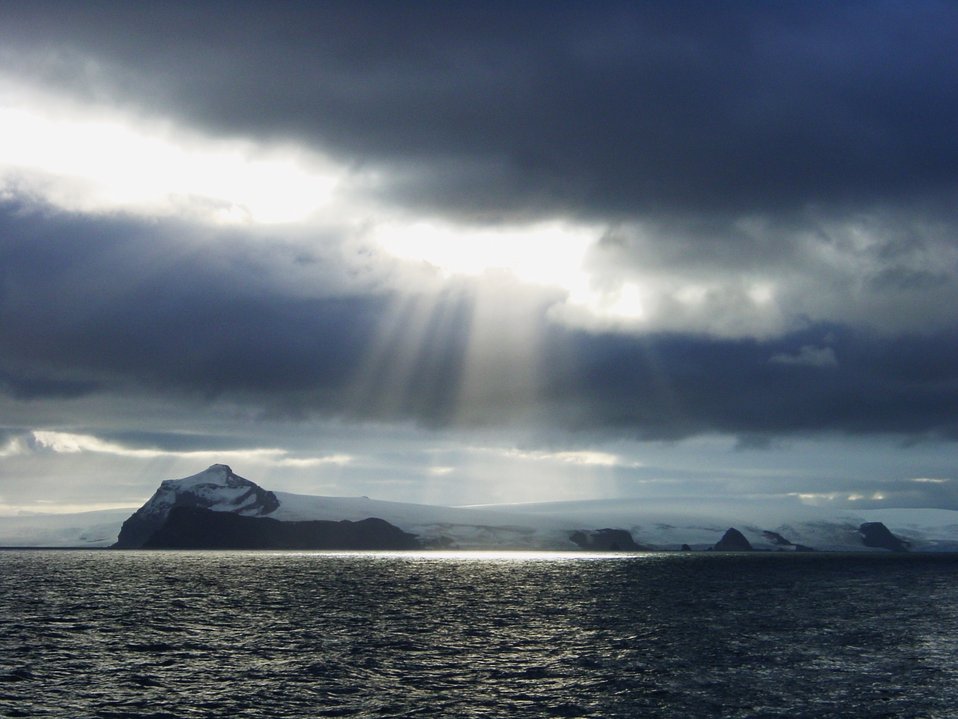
Crepuscular rays illuminating Antarctic Peninsula